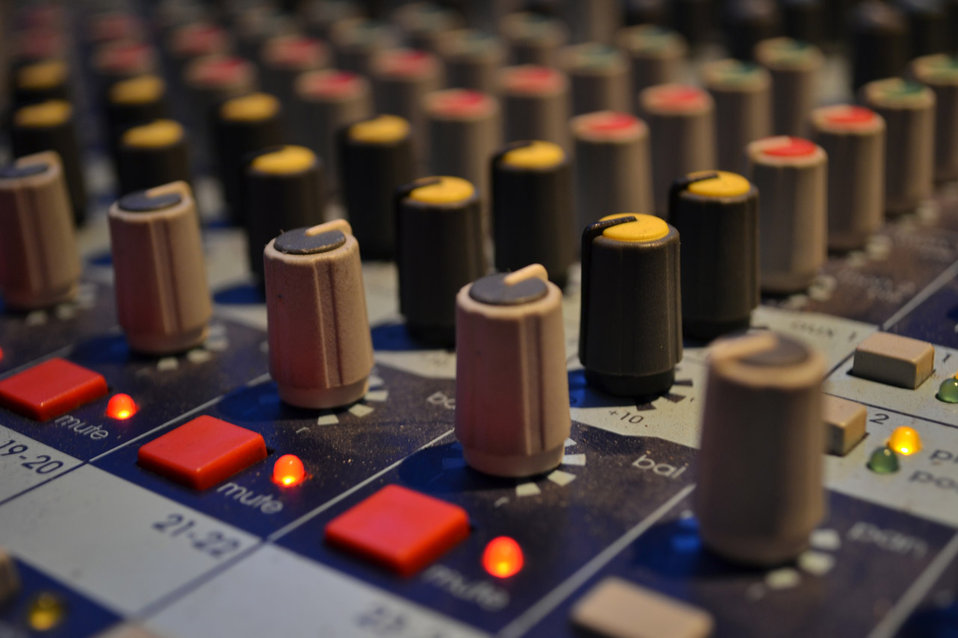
Sliders on mixing board

Sliders and buttons on audio mixing board..